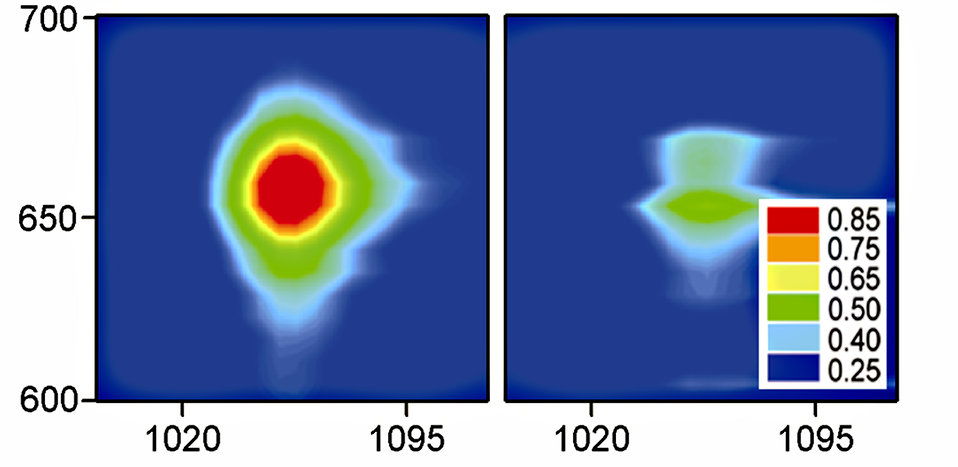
NIST's Stretching Exercises Shed New Light On Nanotubes

Biomedical applications could exploit the natural fluorescence of the carbon nanotubes. When light is polarized along a single-walled carbon nanotube (left), this fluorescent emission is strong. For perpendicular polarization (right), however, the emission disappears.